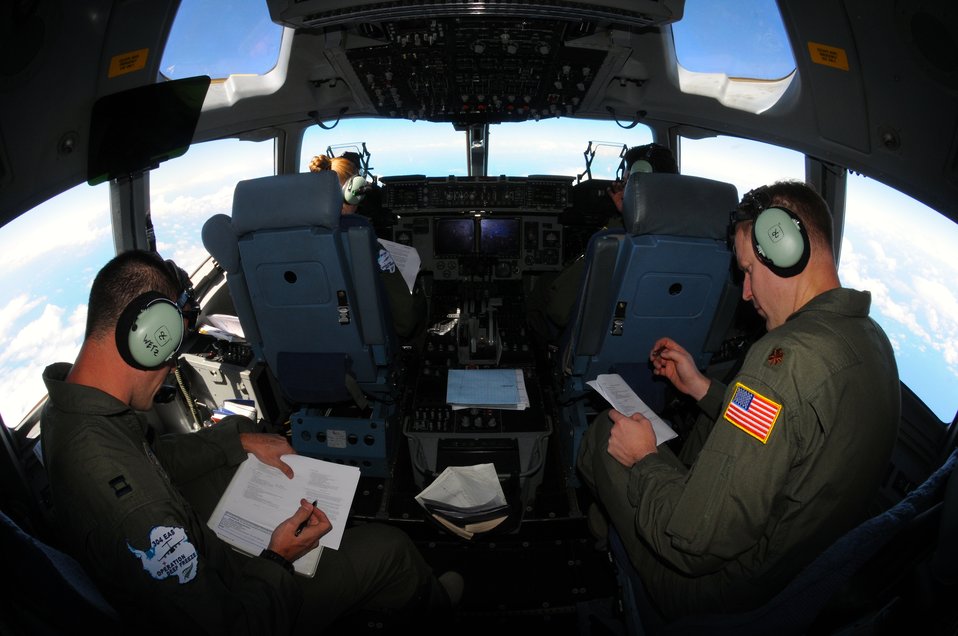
C-17s support Operation Deep Freeze

A C-17 Globemaster III aircrew conducts periodic weather checks Dec. 25, 2010, during a flight from Christchurch, New Zealand, to McMurdo Air Station, Antarctica. The aircraft is assigned to the Air Force Reserve Command’s 728th Airlift Squadron at McChord Air Force Base, Wash. The flight was turned around as bad weather made it too difficult to land in Antarctica.